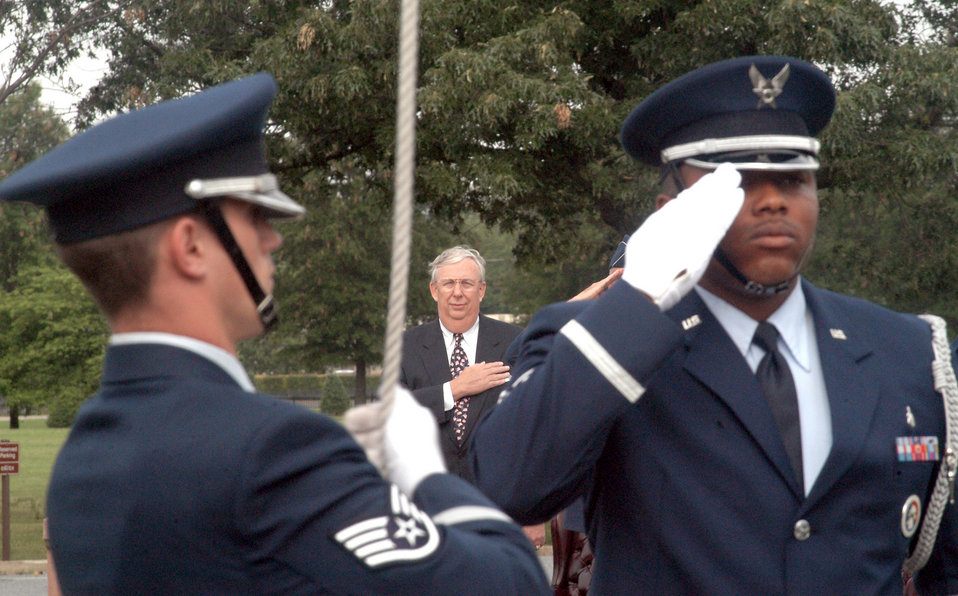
Celebrating Old Glory

ANDREWS AIR FORCE BASE, Md. -- Secretary of the Air Force Dr. James G. Roche places his hand over his heart as members of the 89th Airlift Wing base honor guard raise the flag during the playing of the National Anthem during a Flag Day ceremony here June 14.